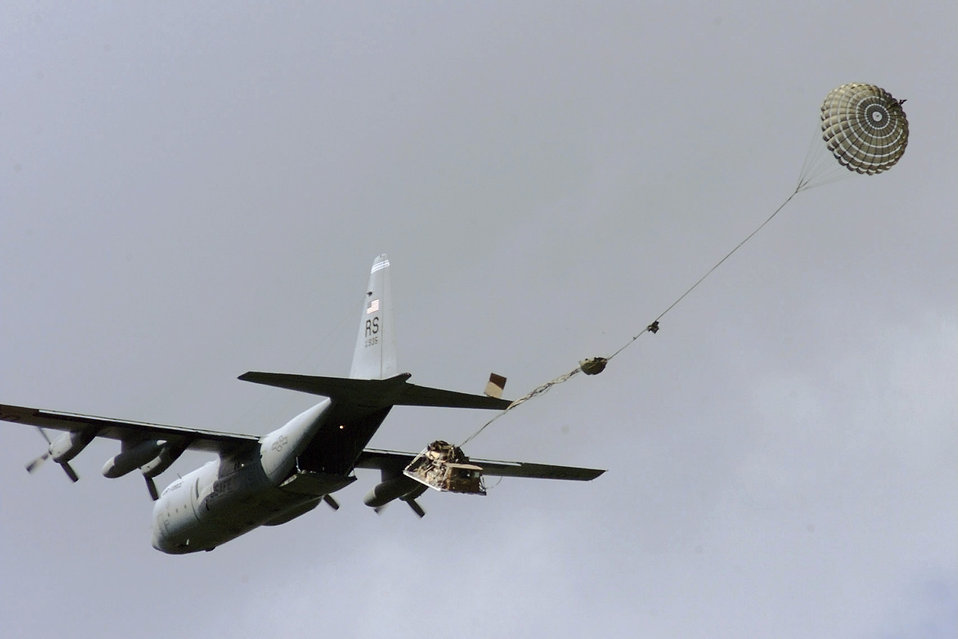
C-130 drop

FILE PHOTO -- The C-130 Hercules primarily performs the tactical portion of the airlift mission. The aircraft is capable of operating from rough, dirt strips and is the prime transport for airdropping troops and equipment into hostile areas. C-130s operate throughout the U.S. Air Force, serving with Air Mobility Command, theater commands, Air National Guard and the Air Force Reserve Command, fulfilling a wide range of operational missions in both peace and war situations. Basic and specialized versions of the aircraft airframe perform a diverse number of roles, including airlift support, Arctic ice resupply, aeromedical missions, aerial spray missions, fire-fighting duties for the U.S. Forest Service and natural disaster relief missions.